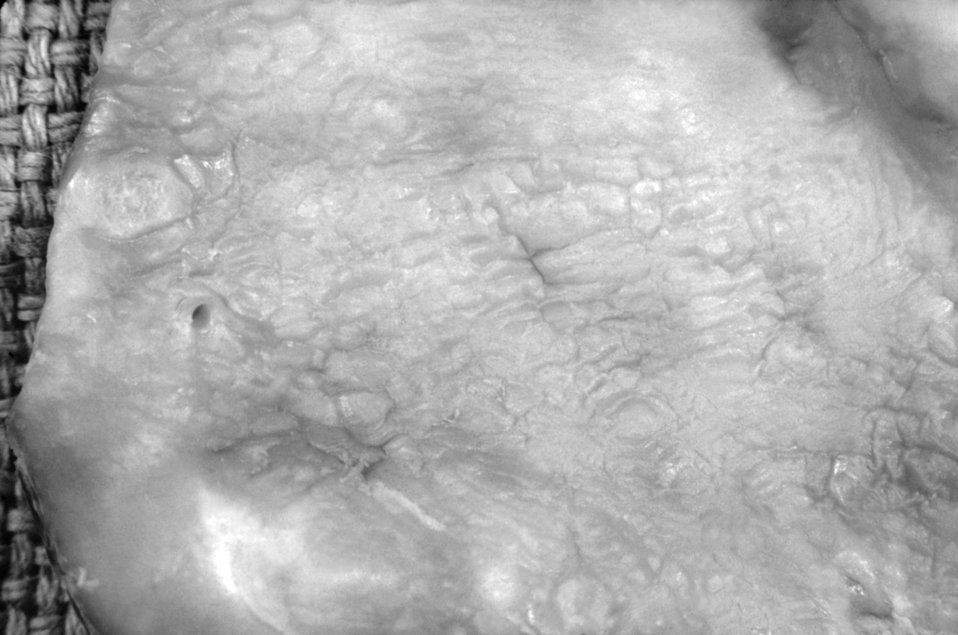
Syphilis of the aorta, or aortitis, during the tertiary stage of the disease.